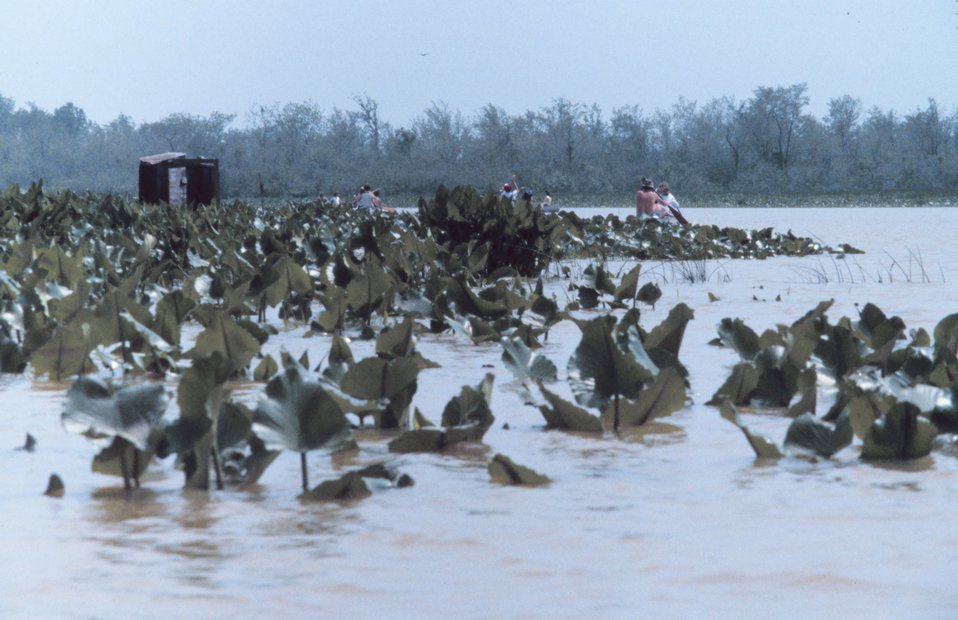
Pickerel weed (Pondeteria cordata) marsh in the Patuxent River. Found in freshwater tidal marshes, it is a source of food for deer.